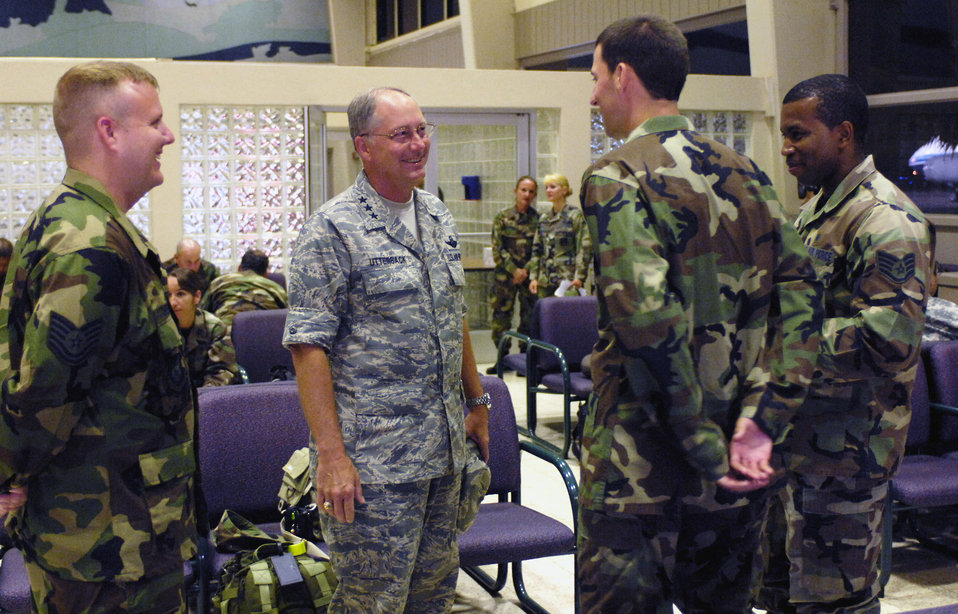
Medics on the move

Lt. Gen. Loyd S. Utterback speaks to medics prior to them leaving for a humanitarian mission July 20 at the passenger terminal on Hickam Air Force Base, Hawaii. Approximately 50 Airmen, Soldiers and Sailors will travel to Vanuatu, Kiribati and Nauru to provide medical, dental and engineering support to the residents of the Pacific islands. General Utterback is the 13th Air Force commander.